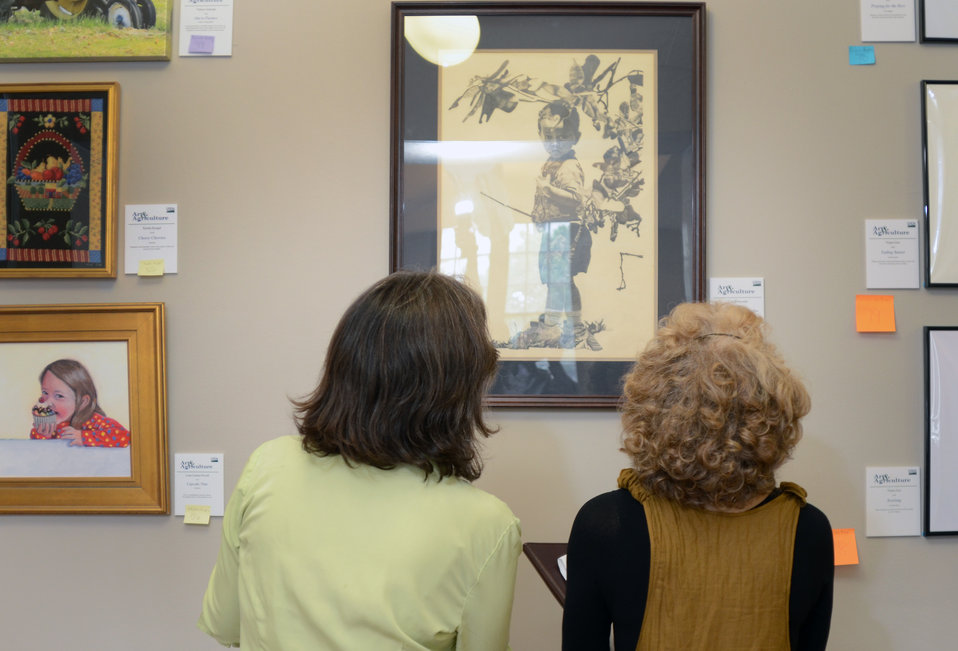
Farar Elliott, Office of Art and Archives Chief from the House of Representatives (left) and Marjorie Share, Independent Museums and Institutions Professional (right) judge the U.S. Department of Agriculture (USDA) Art and Agriculture competition held in the USDA South Building, Washington, D.C. on Thursday, May 10, 2012.